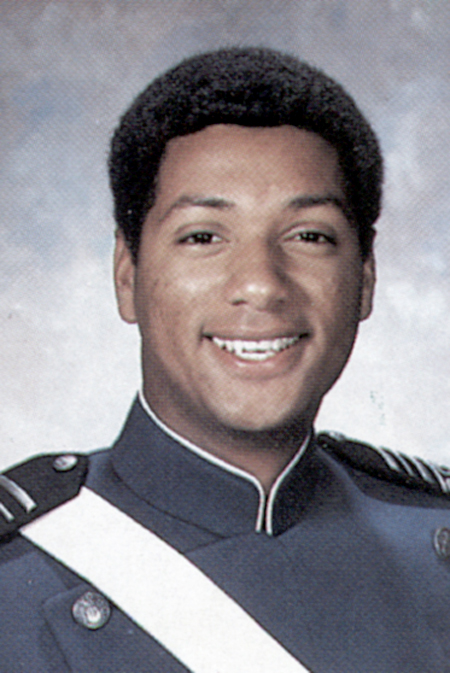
In memory of United 93 copilot

LeRoy Homer, seen here in his Class of 1987 Air Force Academy yearbook photo, was the first officer on United 93 when it was hijacked Sept. 11, 2001.